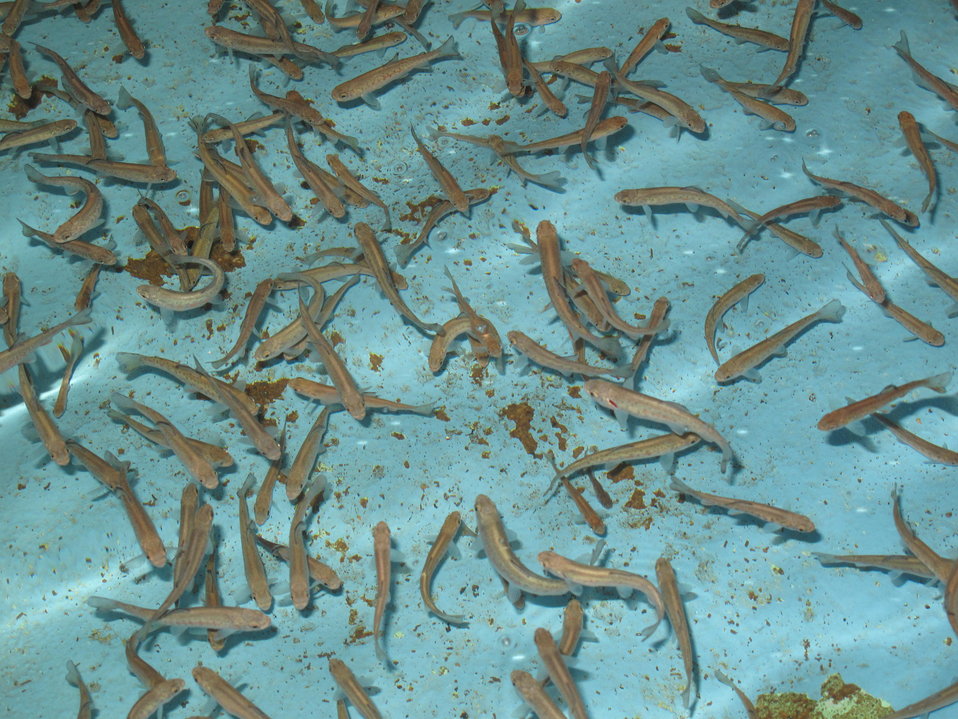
Leadville National Fish Hatchery

Year-old Greenback Cutthroat Trout